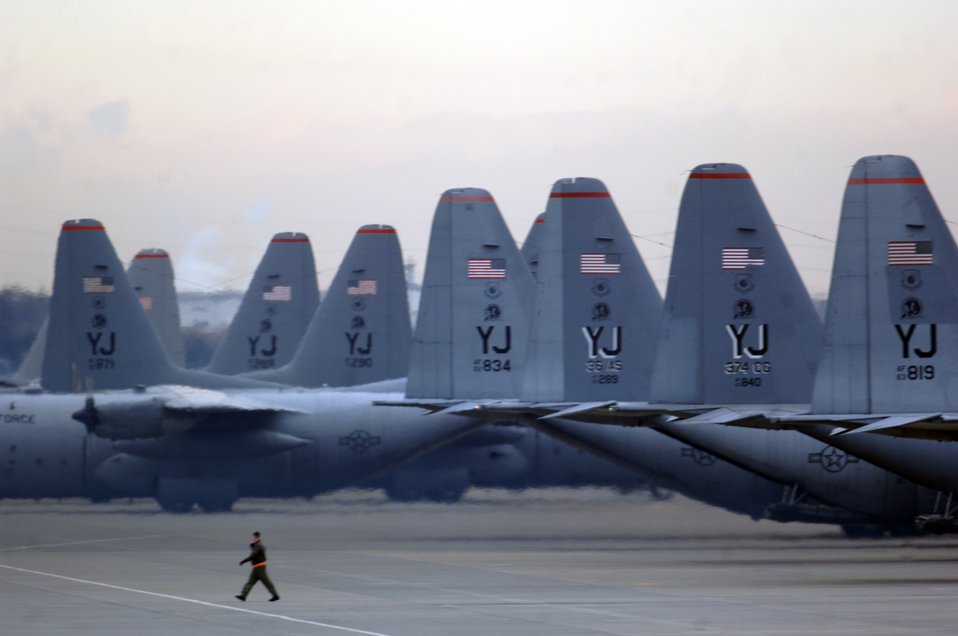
Hercules row

YOKOTA AIR BASE, Japan (AFPN) -- C-130 Hercules aircraft from the 36th Airlift Squadron sit on the flightline before a six-ship sortie. The squadron is the only forward-based tactical airlift squadron in the Pacific region. They provide C-130 aircrews to conduct theater airlift, special operations, aeromedical evacuation, search and rescue, repatriation and humanitarian relief missions.